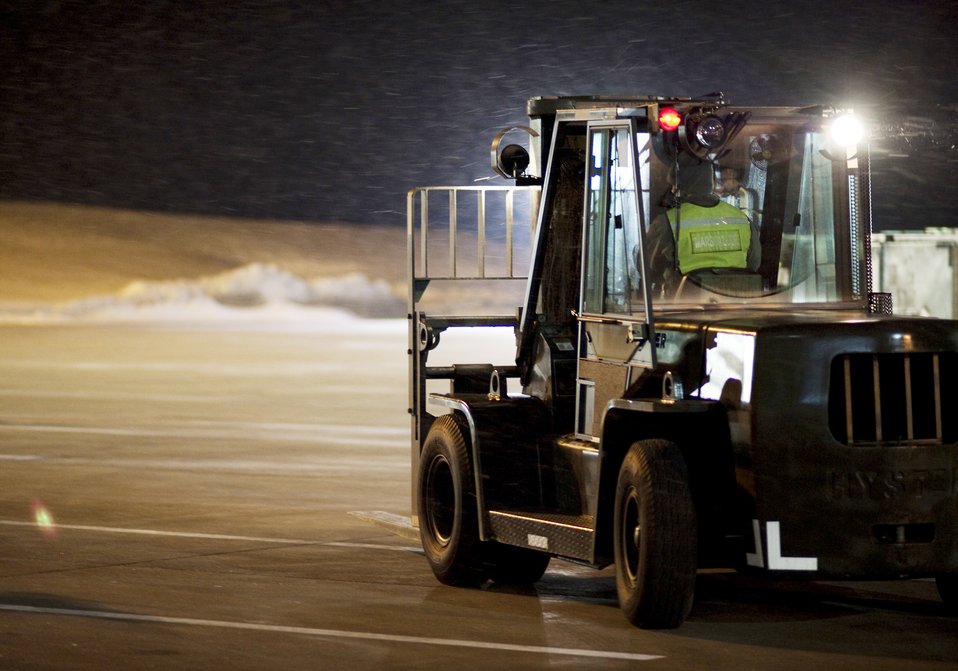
Misawa operations after dark

A 6,000-pound forklift drives to pick up another pallet near a hangar Jan. 28, 2010, at Misawa Air Base, Japan. The 35th Logistics Readiness Squadron cargo deployment function kept operating regardless of the 2.4 inches of snowfall and freezing temperatures ensuring the equipment was ready to go when its plane arrived.